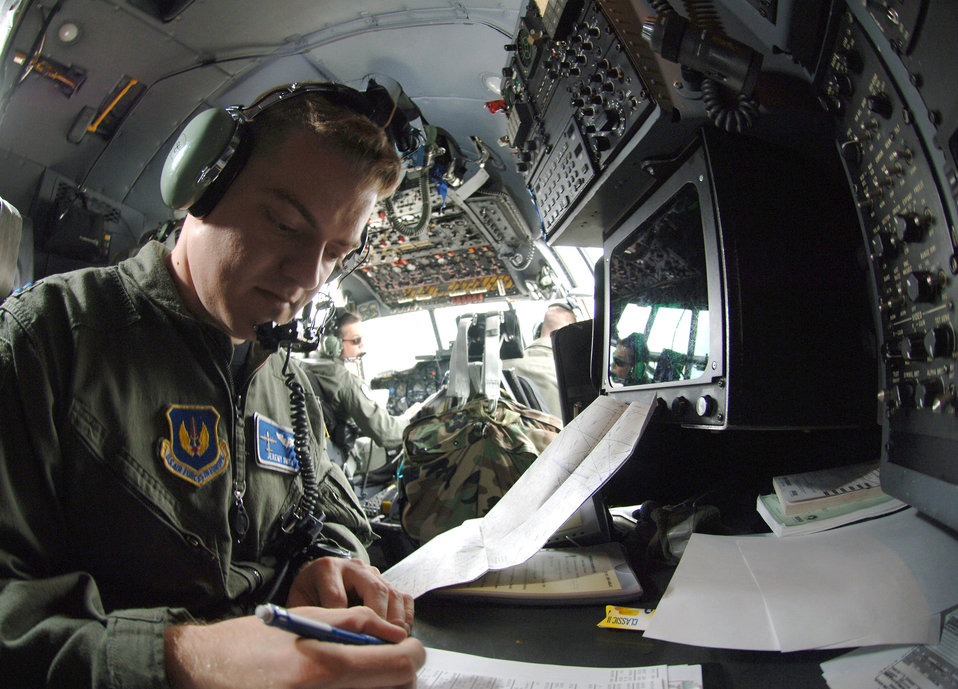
C-130 mission in Germany

Capt. Jeremy Smith prepares the C-130 Hercules navigation system for the day's mission from Ramstein Air Base, Germany, on Monday, June 5, 2006. Captain Smith is a C-130 Hercules navigator with the 37th Airlift Squadron.